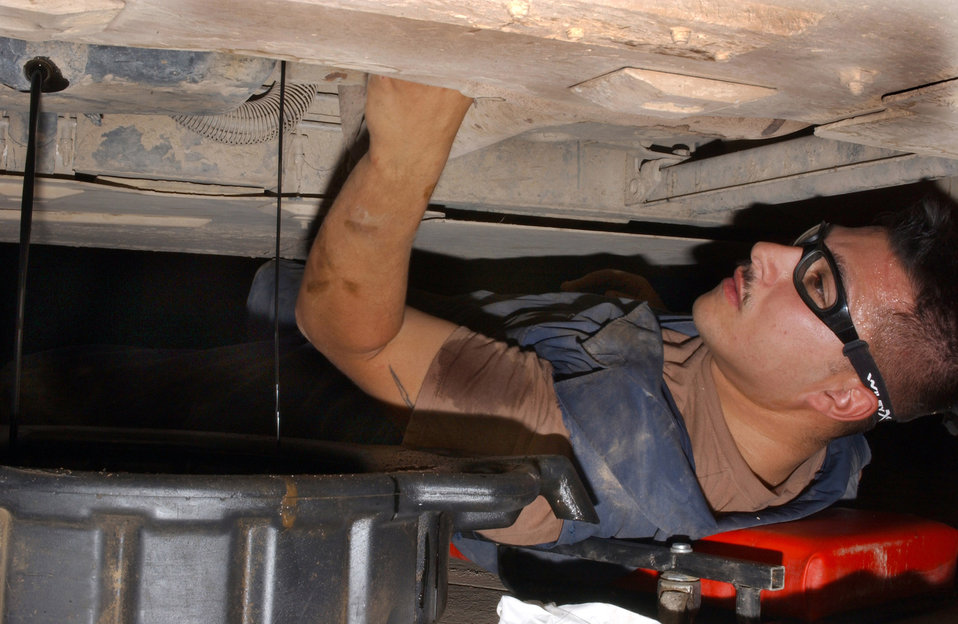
Mechanics keep war effort rolling

BAGHDAD, Iraq -- Staff Sgt. Paul Bohn changes the oil on a Humvee here. He is a vehicle mechanic with the 447th Expeditionary Logistics Readiness Squadron and is deployed from Kadena Air Base, Japan.